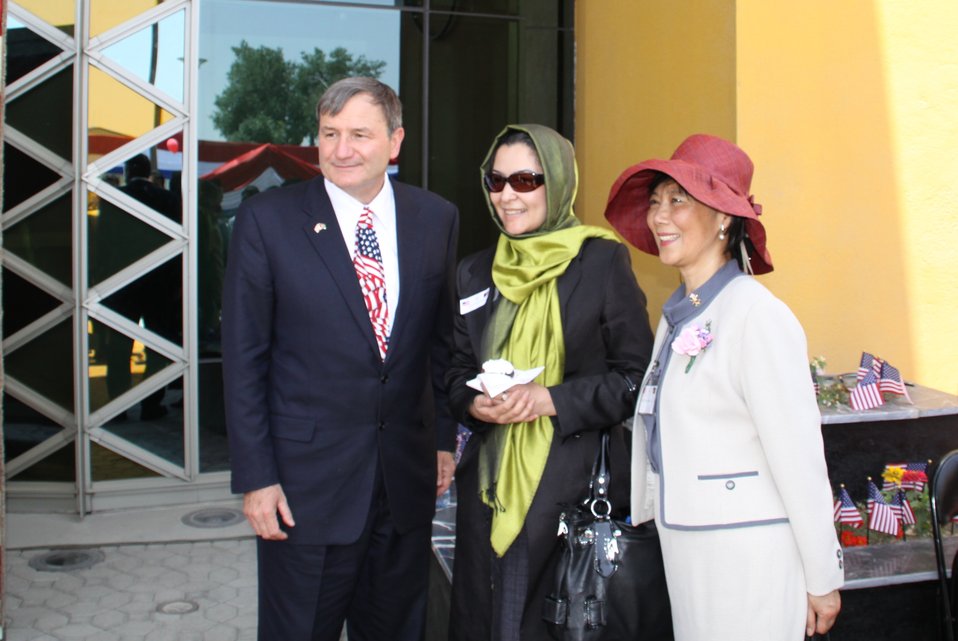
Kabul Official July 4th Celebration